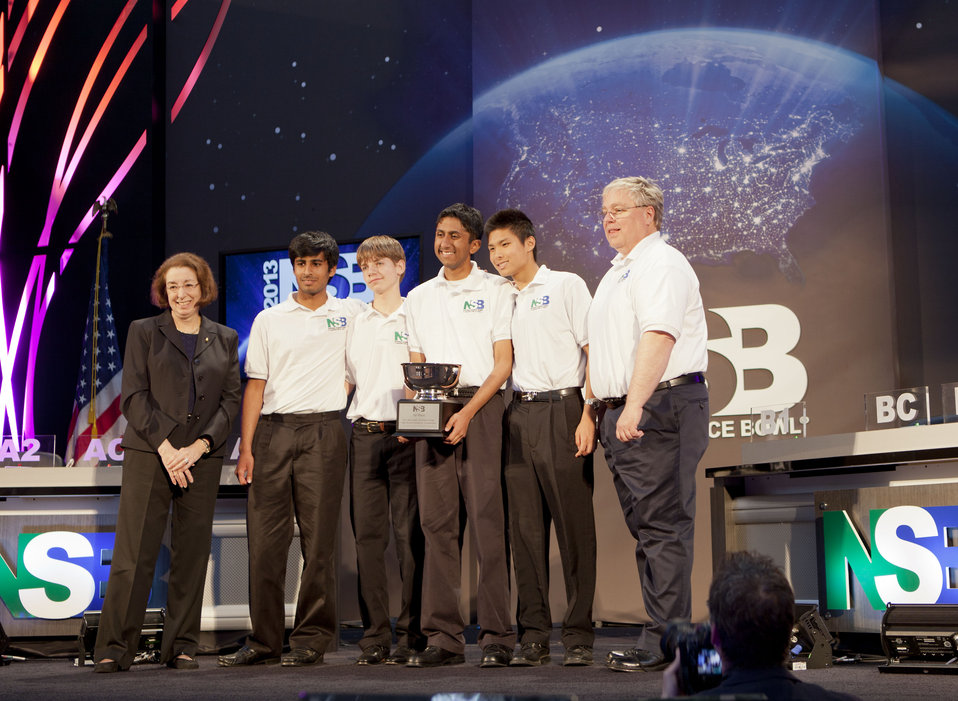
National Science Bowl 2013

Teammates Siddharth Trehan, Jacob Guev, Saaket Agrawal and Daniel Shen pose with coach James Hill after taking first place at the 2013 National Science Bowl. The competition took place at the National Building Museum, Monday, April 29, 2013, in Washington, DC.